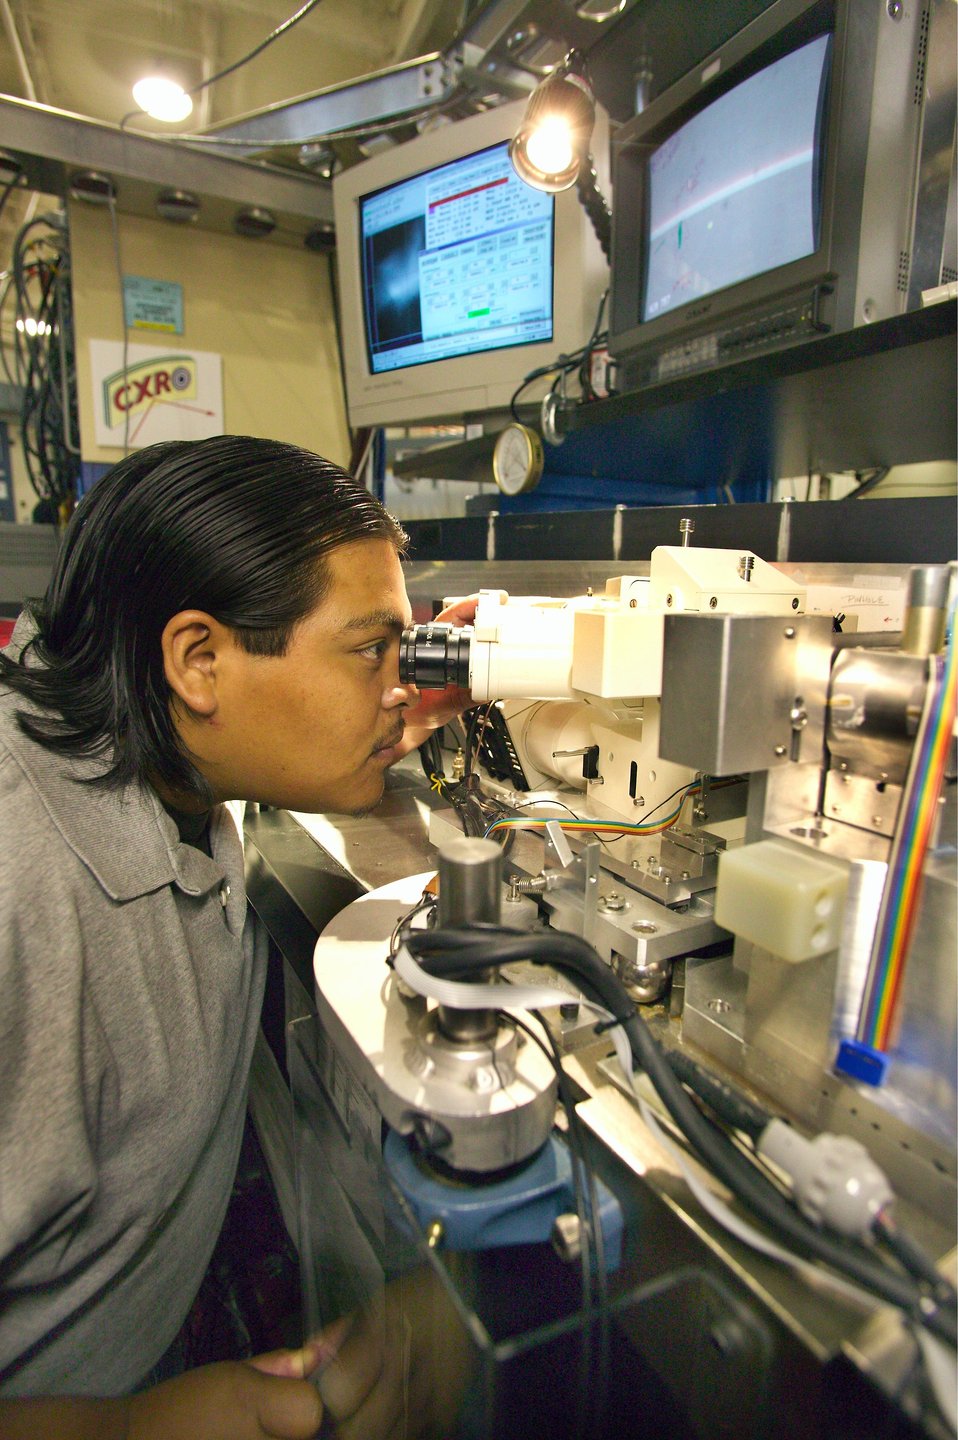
A STUDENT FROM THE CENTER FOR SCIENCE AND ENGINEERING EDUCATION AT CXRO BEAMLINE AT THE ADVANCED LIGHT SOURCE, LAWRENCE BERKELEY NATIONAL LABORATORY.

LBNL'S ADVANCED LIGHT SOURCE IS A NATIONAL USER FACILITY THAT GENERATES INTENSE LIGHT FOR SCIENTIFIC AND TECHNOLOGICAL RESEARCH. AS ONE OF THE WORLD'S BRIGHTEST SOURCES OF ULTRAVIOLET AND SOFT X-RAY BEAMS AND THE WORLD'S FIRST THIRD GENERATION SYNCHROTRON LIGHT SOURCE IN ITS ENERGY RANGE, THE ALS MAKE PREVIOUSLY IMPOSSIBLE STUDIES POSSIBLE. THE FACILITY WELCOMES RESEARCHERS FROM UNIVERSITIES, INDUSTRIES AND GOVERNMENT LABORATORIES WORLD WIDE.